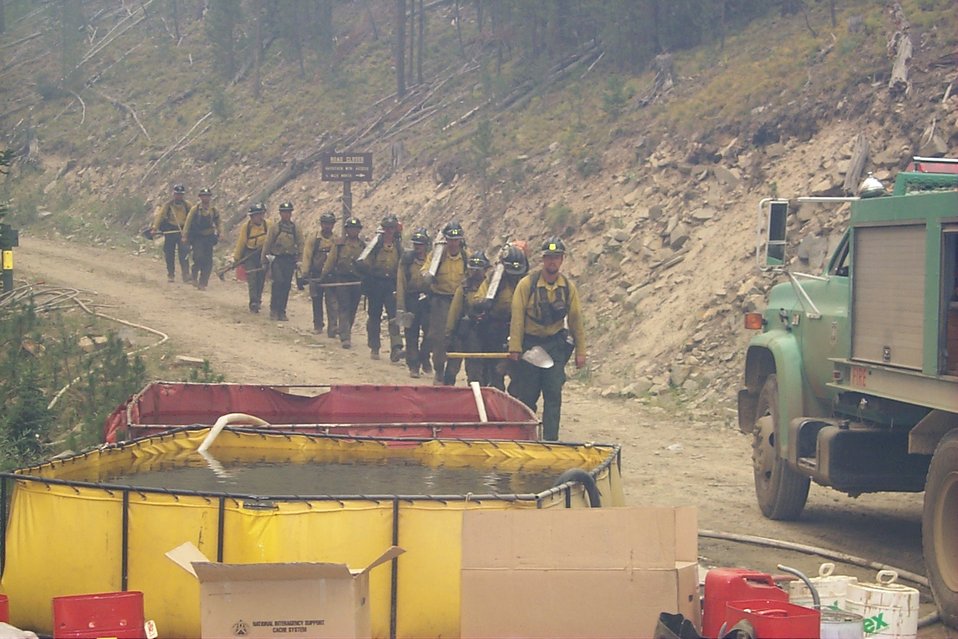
Line crew Fire Clearwater Fire Salmon Field Office USRD Upper Snake River District